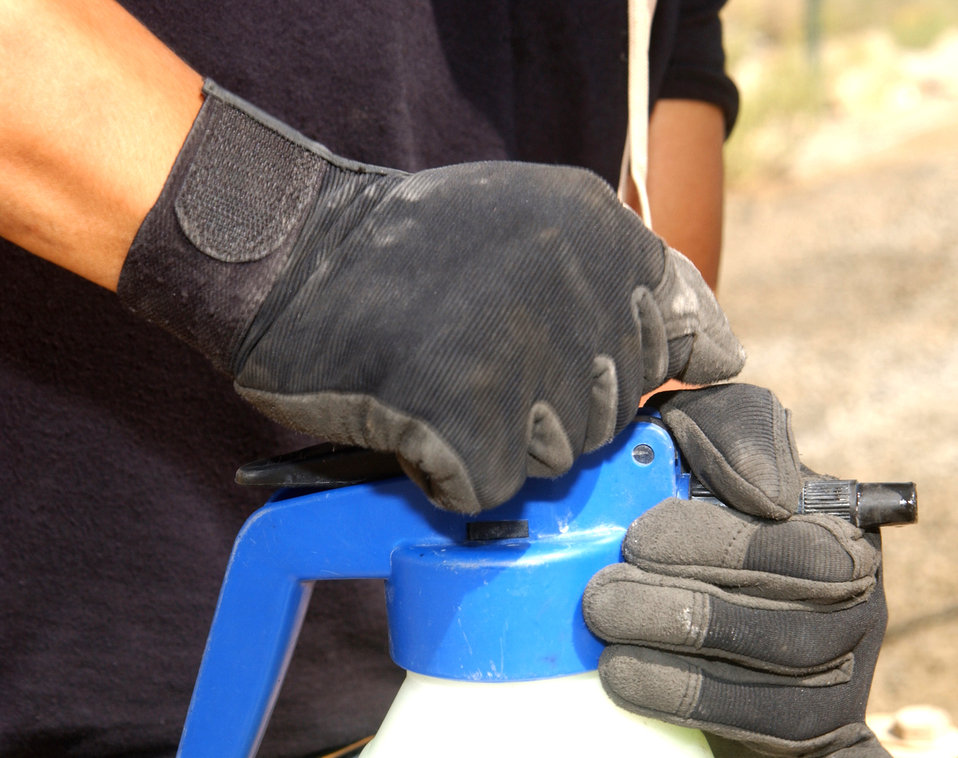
Keeping it cool

Staff Sgt. Ramir Manaloto pressurizes a jug of hydrochloric acid before spraying it onto the coils of an air-conditioning unit outside one of the dining facilities of this deployed location in Southwest Asia Oct. 11. The acid cleans sand, grit and debris from the unit's coils, which are much like that of an automobile radiator. There are better than 3,000 air-conditioning units at this base, which is home to about 1,500 Airmen and the 380th Air Expeditionary Wing. Sergeant Manaloto is assigned to the 380th Expeditionary Civil Engineer Squadron and deployed from Yokota Air Base, Japan.